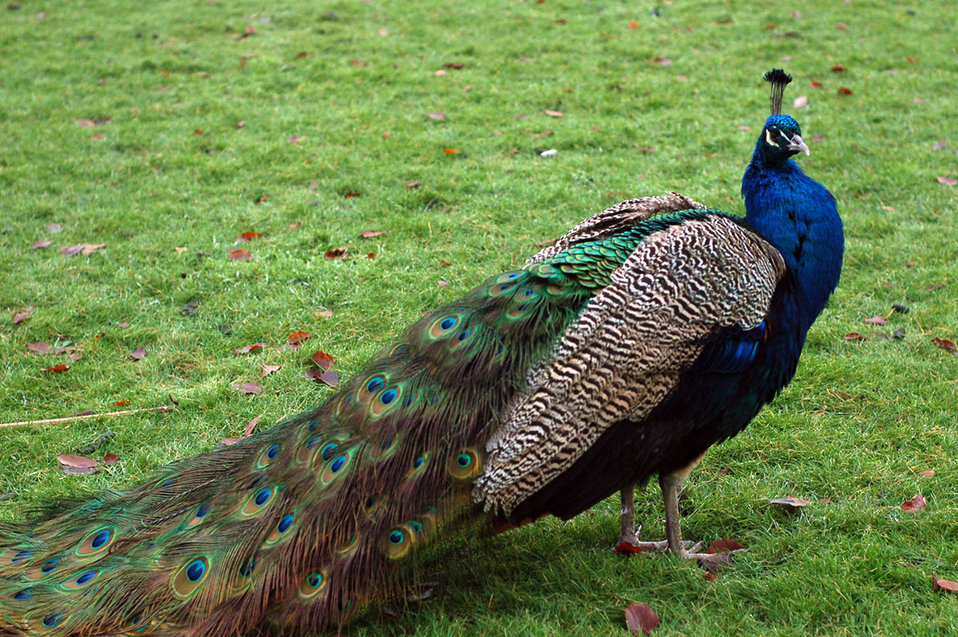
Peacock in the abbey.